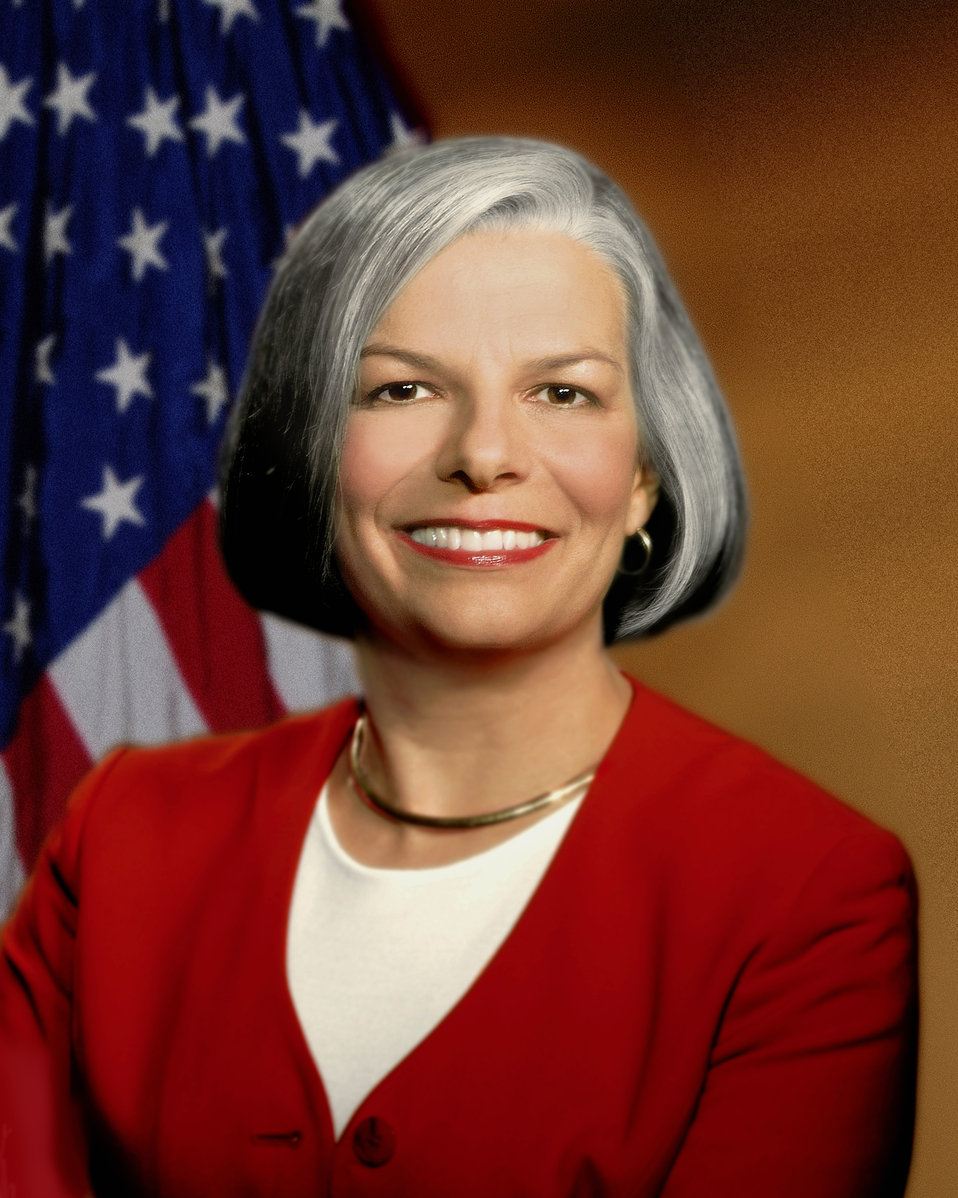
Julie Louise Gerberding, MD, MPH